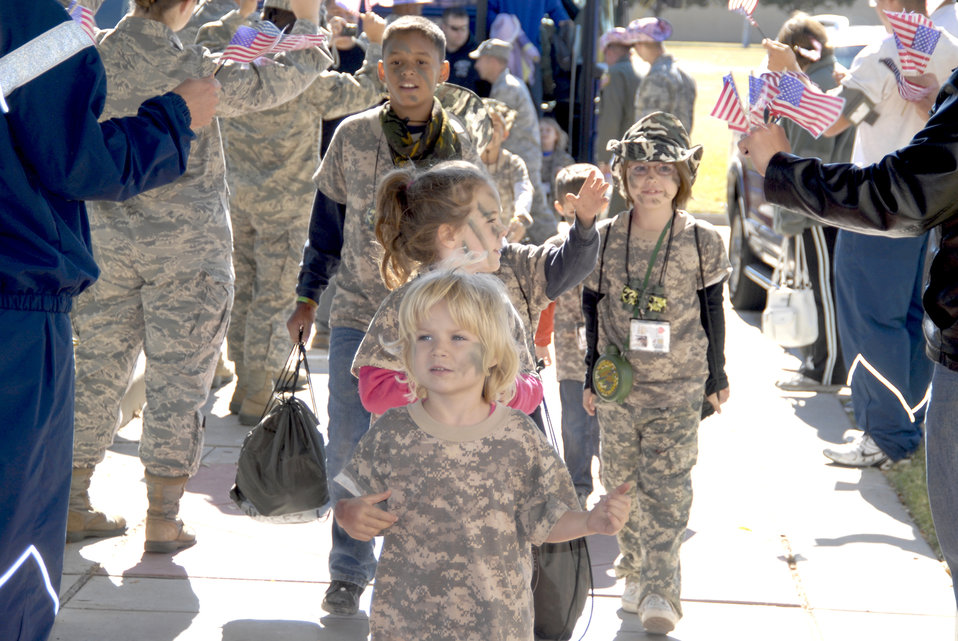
Goodfellow Operation KIDS

Georgia Shirley, 5, leads her squad to the welcome home celebration at the event center for the Operation KIDS 2010 participants Nov. 13, 2010at Goodfellow Air Force Base, Texas. More than 60 military youths participated in this year's event to get a glimpse of what their military parents go through when deploying.